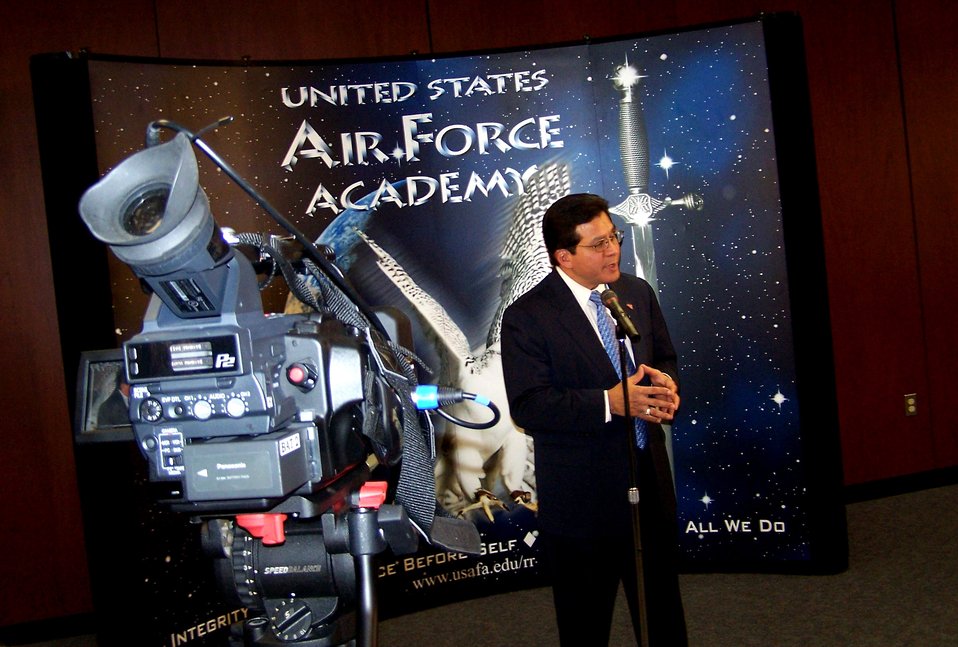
Attorney general speaks to U.S. Air Force Academy cadets

United States Attorney General Alberto Gonzales answers reporters' questions Nov. 18 after talking about civil liberties and war on terrorism issues to cadets at the U.S. Air Force Academy, Colo.